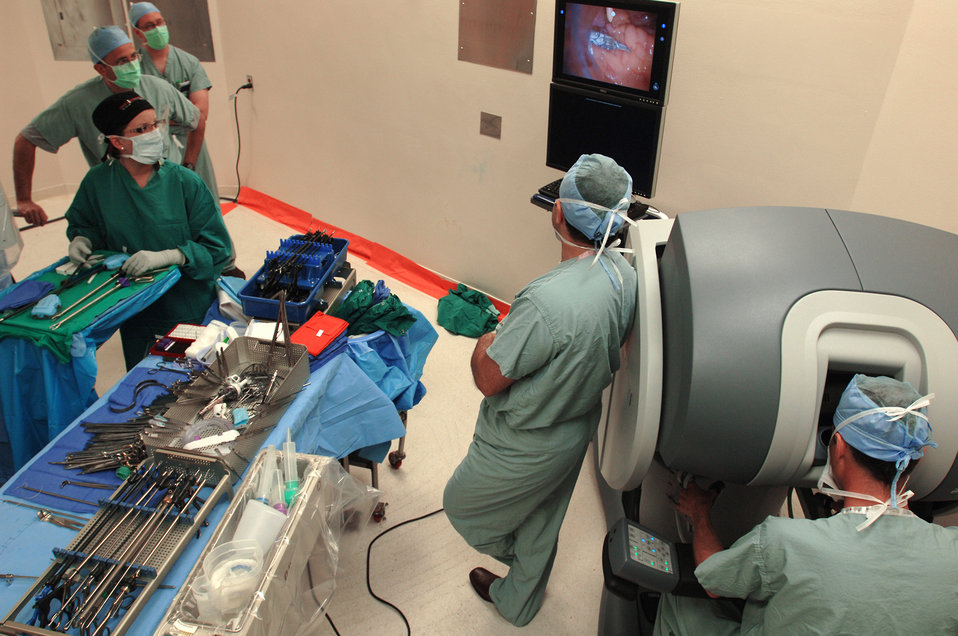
Doctor performs first robot-assisted surgery in the Air Force

Medical personnel look at a monitor while Lt. Col. (Dr.) Kyle Weld (right) performs a laparoscopic prostatectomy, the surgical removal of prostate cancer, April 10 at Wilford Hall Medical Center. Dr. Weld is the first Air Force doctor to use a robot in surgery, and is the director of endourology at the 59th Surgical Specialties Squadron. The robot provides a magnified, high-definition, three-dimensional view for the physician.